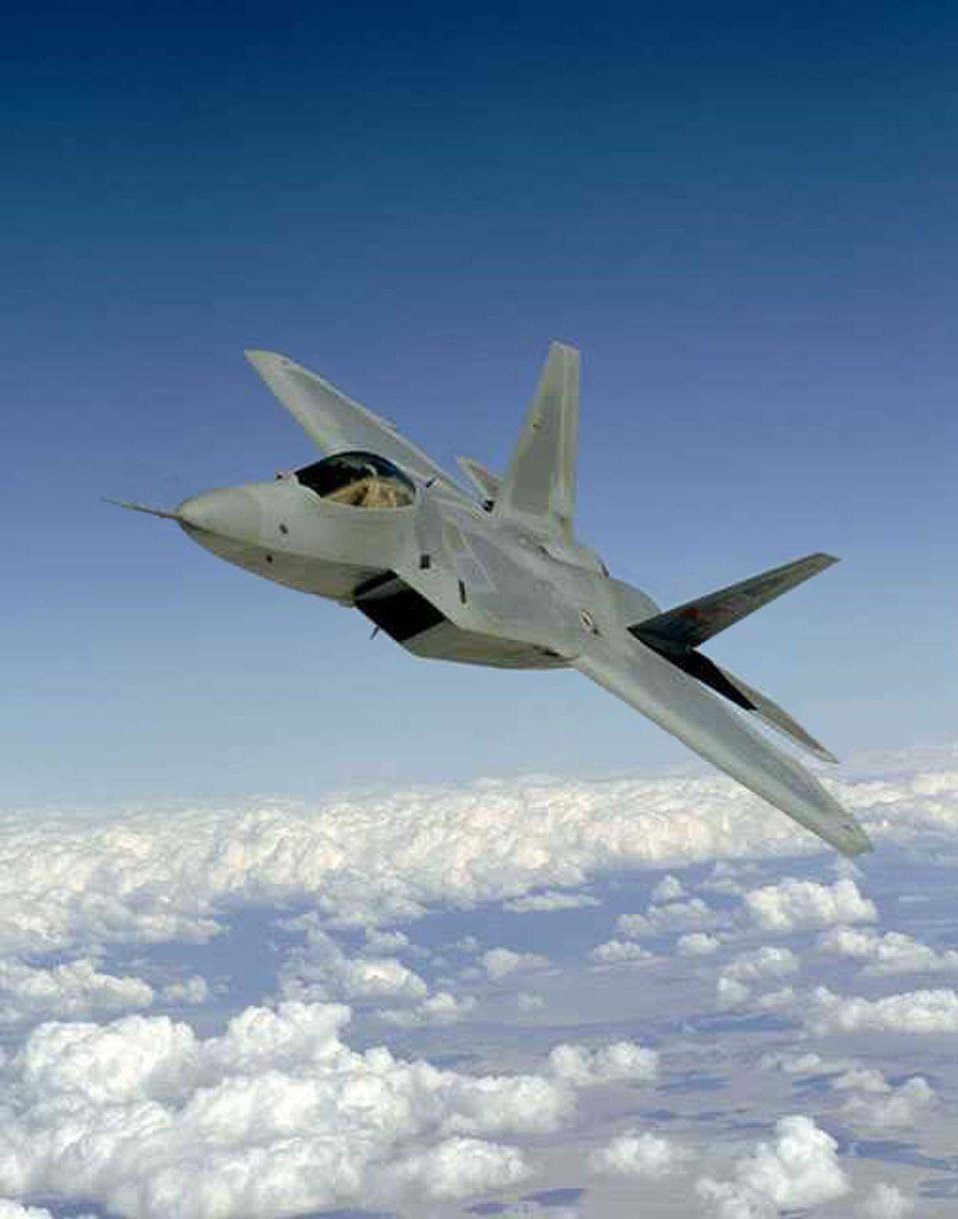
F/A-22 Raptor

EDWARDS AIR FORCE BASE, Calif. -- Raptor 4001 completes its 300th flight hour here with Lockheed Martin test pilot Paul Metz at the controls. Currently, the F/A-22 flight test fleet of three Raptors have logged 620 flight hours.